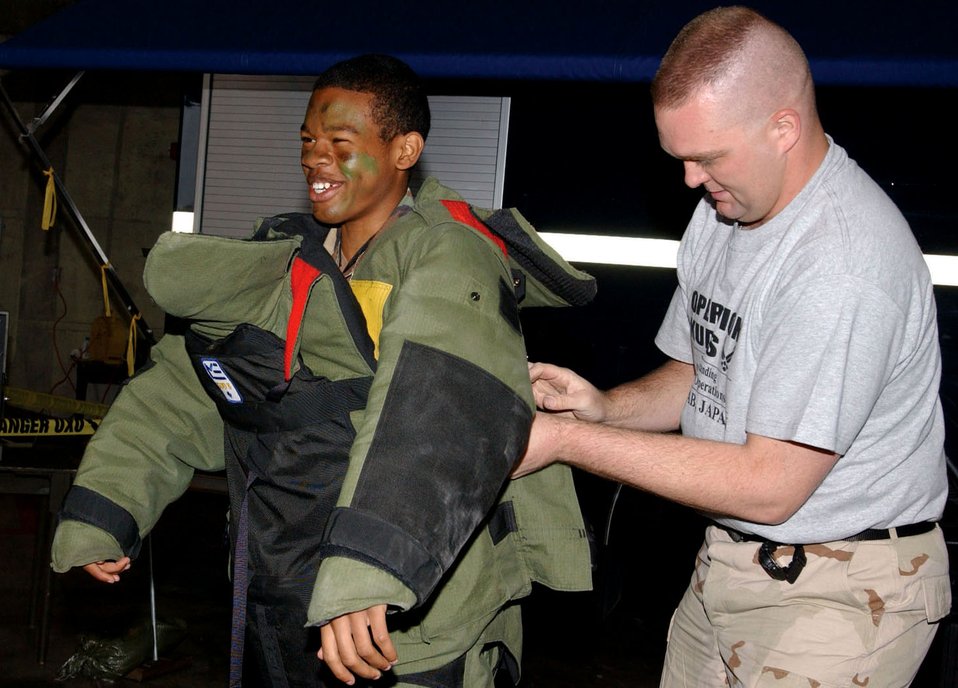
Kadena children get deployment experience

KADENA AIR BASE, Japan -- Staff Sgt. David Baker (right) helps Jeffery Gary put on protective gear for disarming a bomb as part of an Operation Kids Understanding Deployment Operations event March 12. More than 320 children participated in the event to learn more about how their military parents deploy. Sergeant Baker is an explosive ordnance disposal technician with the 18th Civil Engineer Squadron. Jeffery is the son of Master Sgt. Kevin Gary of the 18th Equipment Maintenance Squadron.